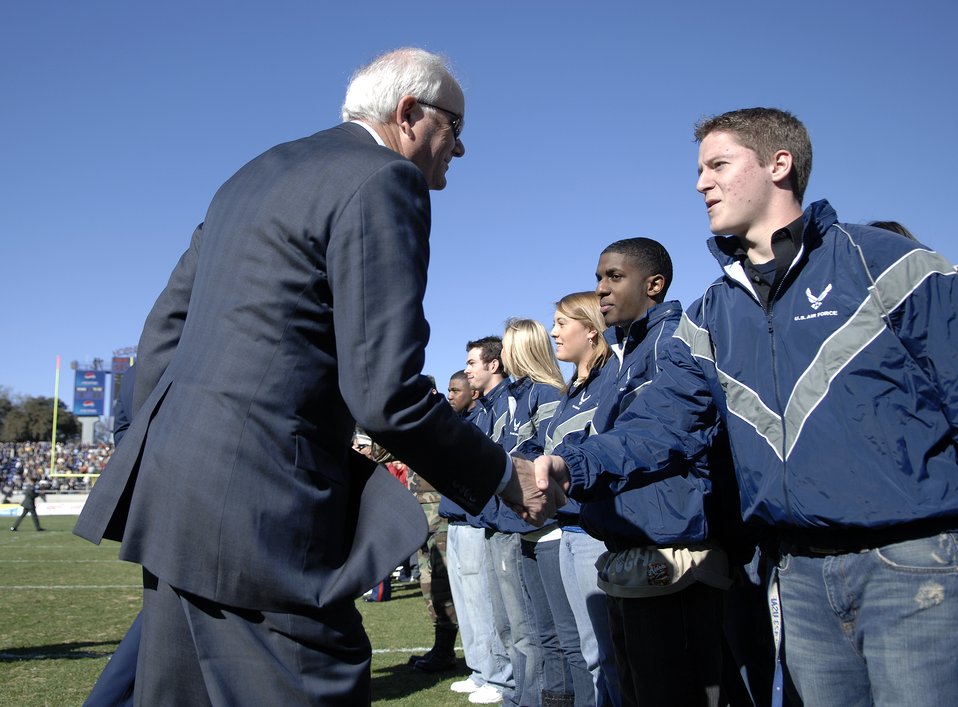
falcons bowl return a bear

Secretary of the Air Force Michael W. Wynne congratulates the Air Force's newest recruits of 2008 during a half-time celebration and mass military enlistment ceremony at the Bell Helicopter Armed Forces Bowl game Dec. 31 in Ft. Worth, Texas.